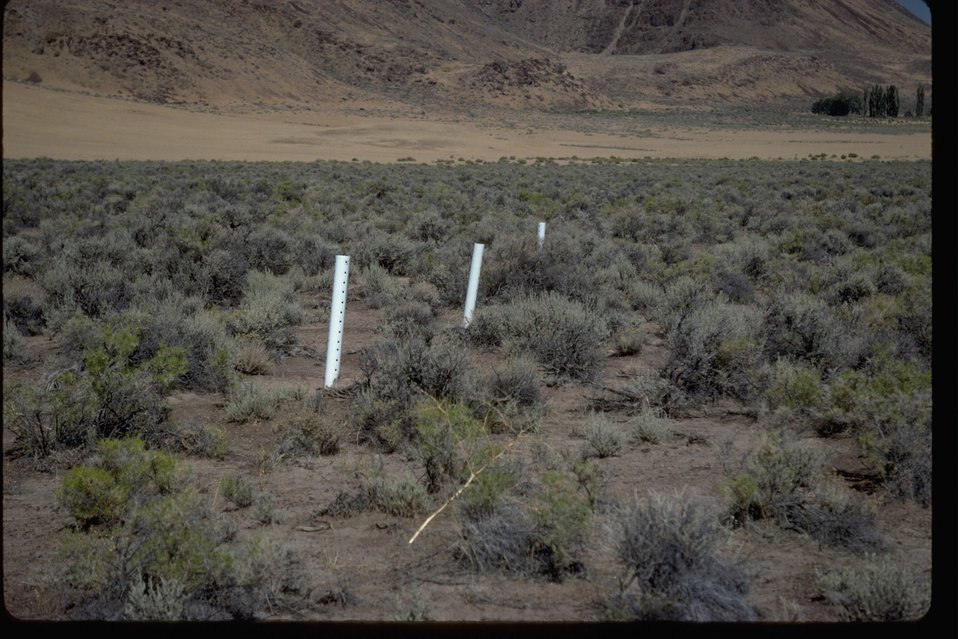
Claim markers in the Pueblo Valley area, south of Fields, OR, and north of Denio, NV.